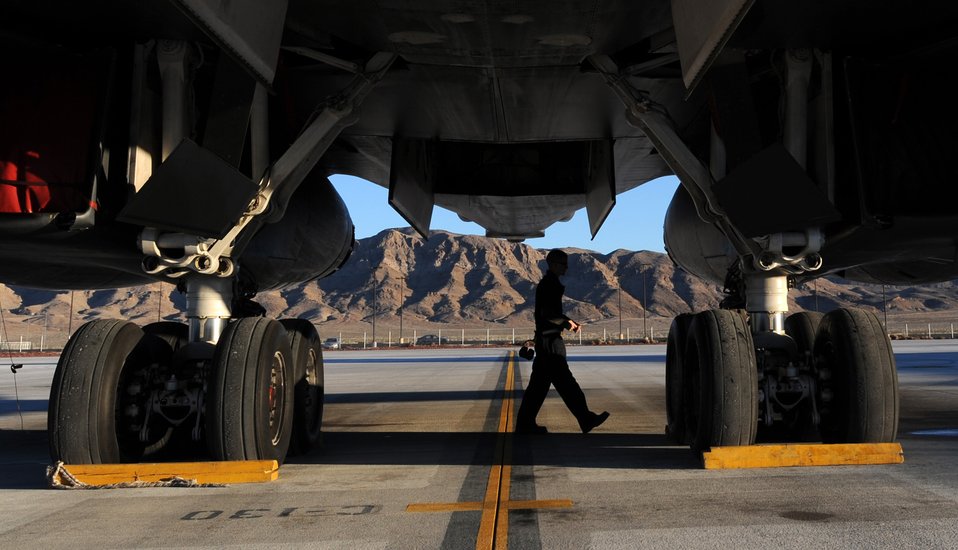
All clear from down here

Staff Sgt. Jesse Hutchings checks for foreign object debris around a B-1 Lancer Jan. 26, 2011, during exercise Red Flag 11-2 at Nellis Air Force Base, Nev. Sergeant Hutchings is a crew chief assigned to the 28th Aircraft Maintenance Squadron at Ellsworth AFB, S.D.